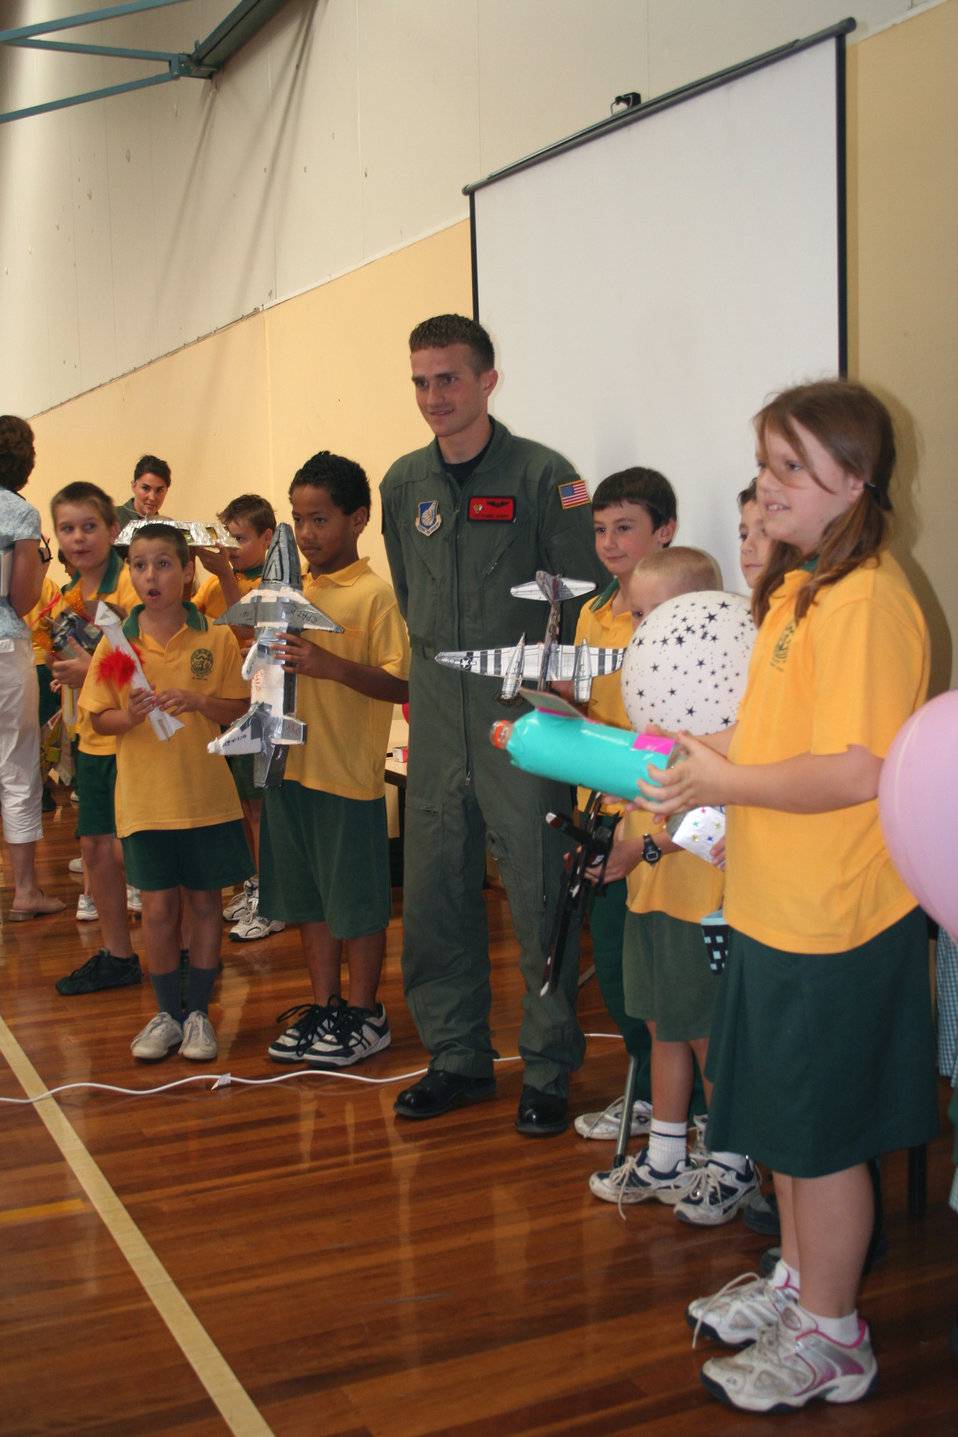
Airmen visit Australian primary school

Airman 1st Class Daniel Baker poses with students from the Lara Primary School in Victoria, Australia. Airman Baker and other Pacific Air Forces Airmen visited the school March 22 to speak to students about being in the Air Force. The Airmen are in Australia supporting Australian International Airshow 2007. Airman Baker is a loadmaster with the 535th Airlift Squadron at Hickam Air Force Base, Hawaii.